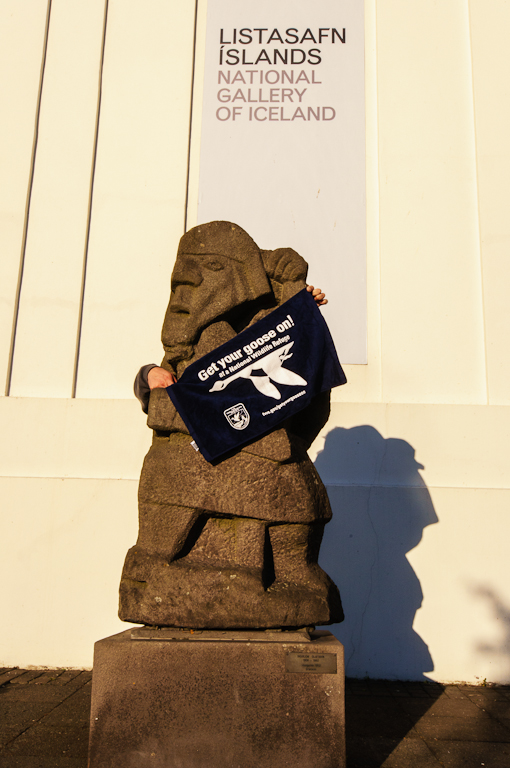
GYGO! in Iceland!